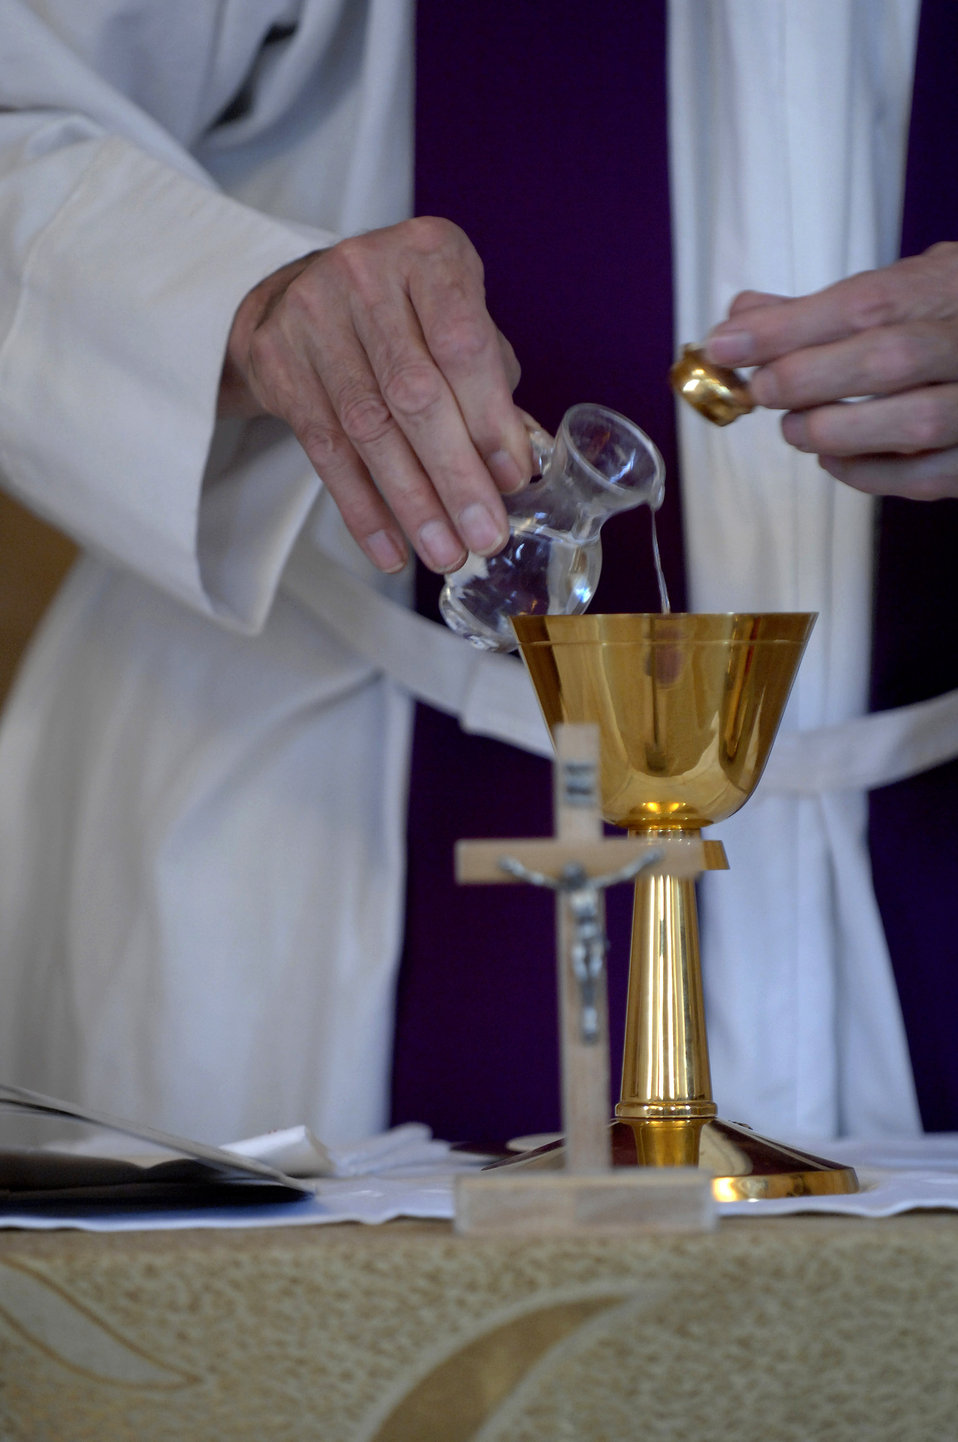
Air Force chaplain celebrates Mass for Romanians in Italian

Chaplain (Maj.) Timothy Hirten pours holy water into a chalice Dec. 5 at the Romanian chapel. Chaplain Hirten volunteers his time to help lead a Catholic Mass for coalition forces at the Romanian camp. The chaplain is assigned to the 407th Air Expeditionary Group Chapel and is deployed from Altus Air Force Base, Okla.